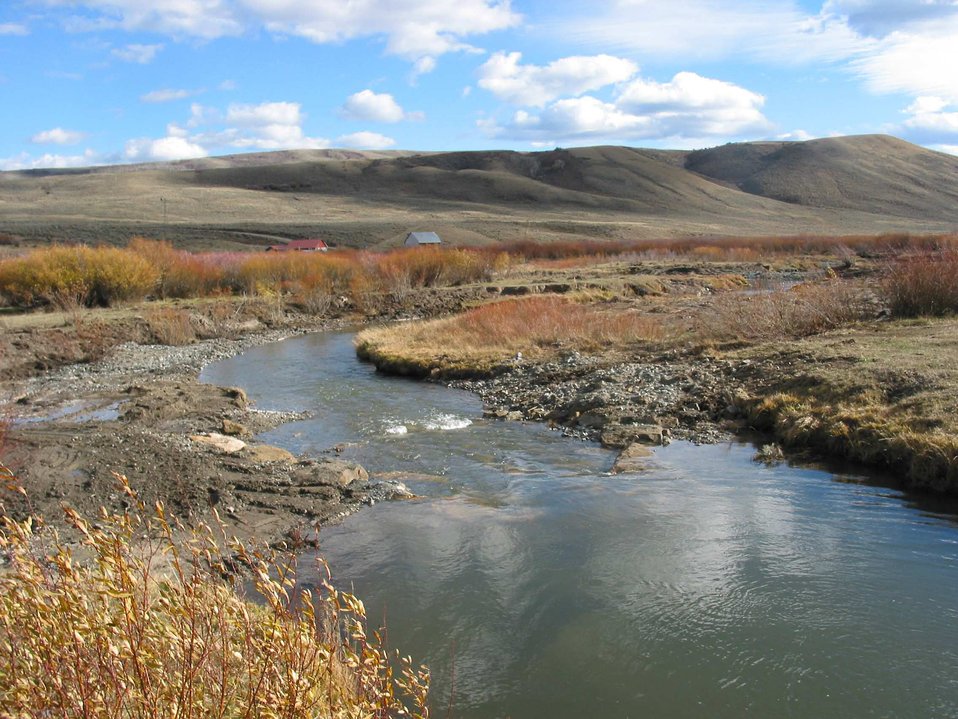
Savory Creek in Wyoming

Restoration of Savory Creek in Wyoming to benefit Colorado cutthroat trout was completed in 2009 with the removal of one diversion dam blocking fish movement.